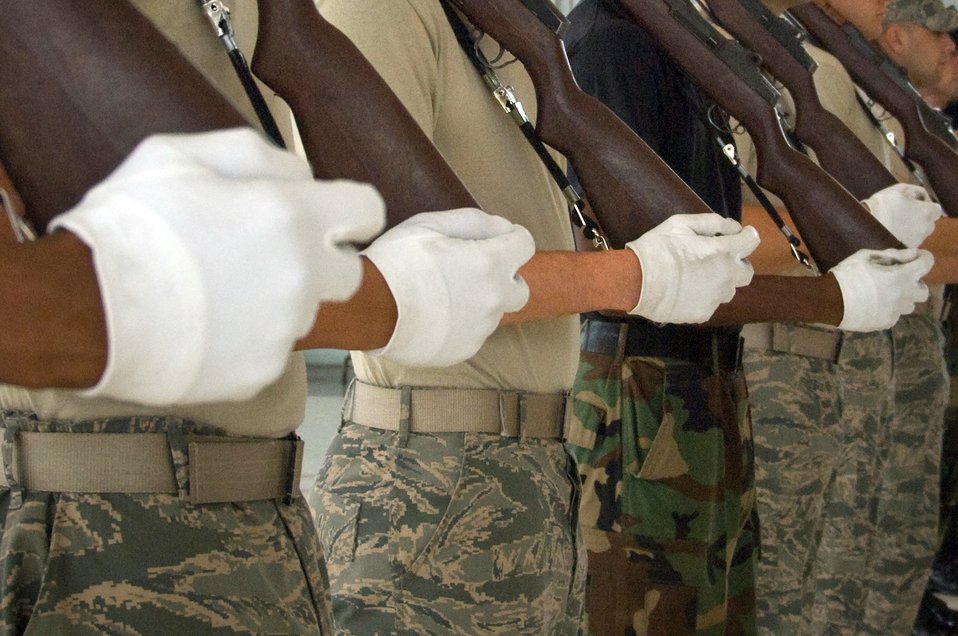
Honor Guard holds annual training camp at Maxwell AFB

The Air Force Honor Guard Drill Team practices their newest line sequence during annual training, held this year at Maxwell Air Force Base, Ala. The traveling component of the AF Honor Guard, the drill team serves as AF ambassadors to recruit, retain and inspire Airmen around the globe.